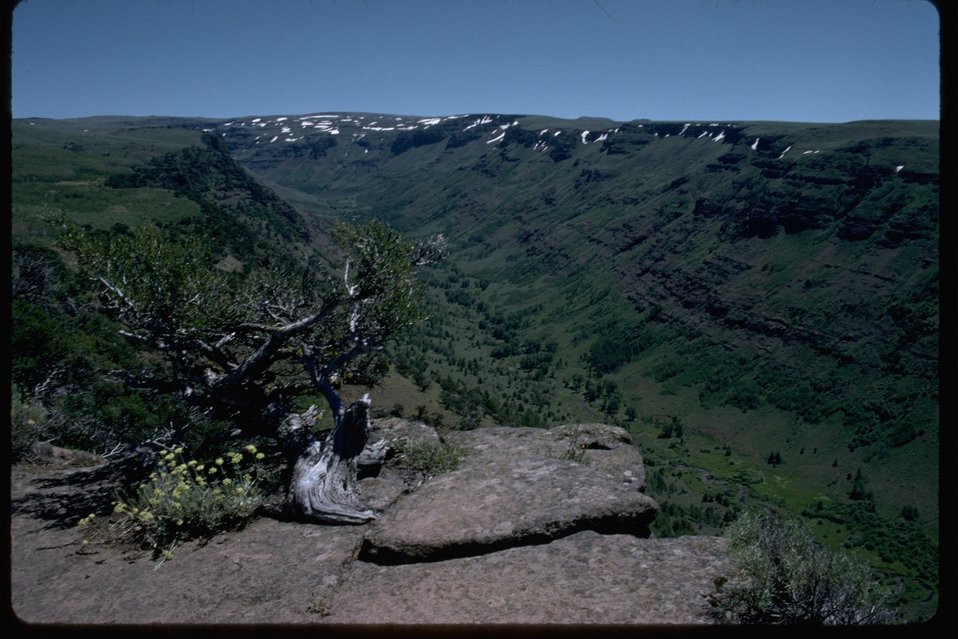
Looking southeast from the Nye Place overlook up the Little Blitzen Gorge.